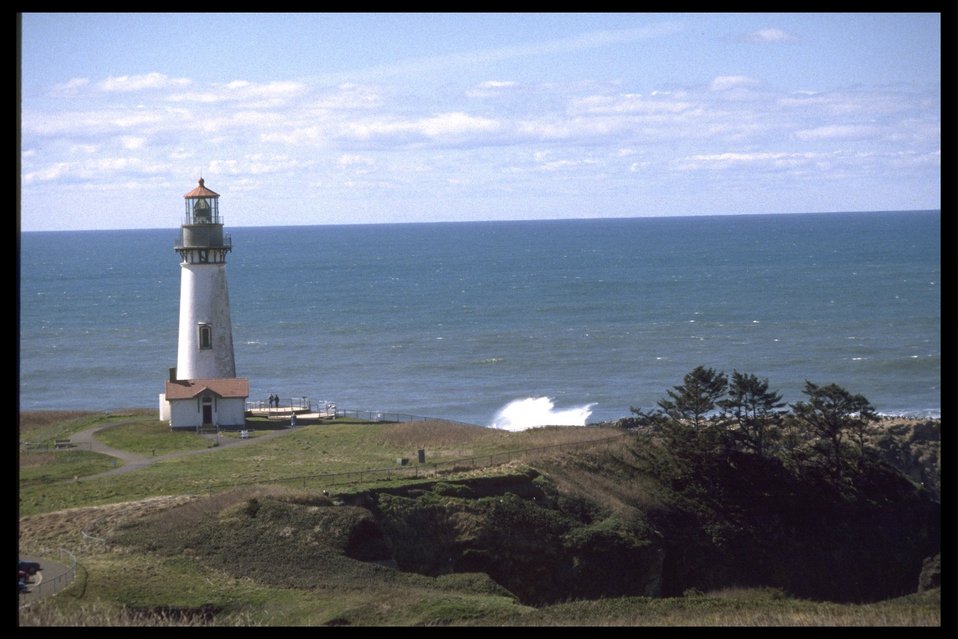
Yaquina Head Lighthouse.